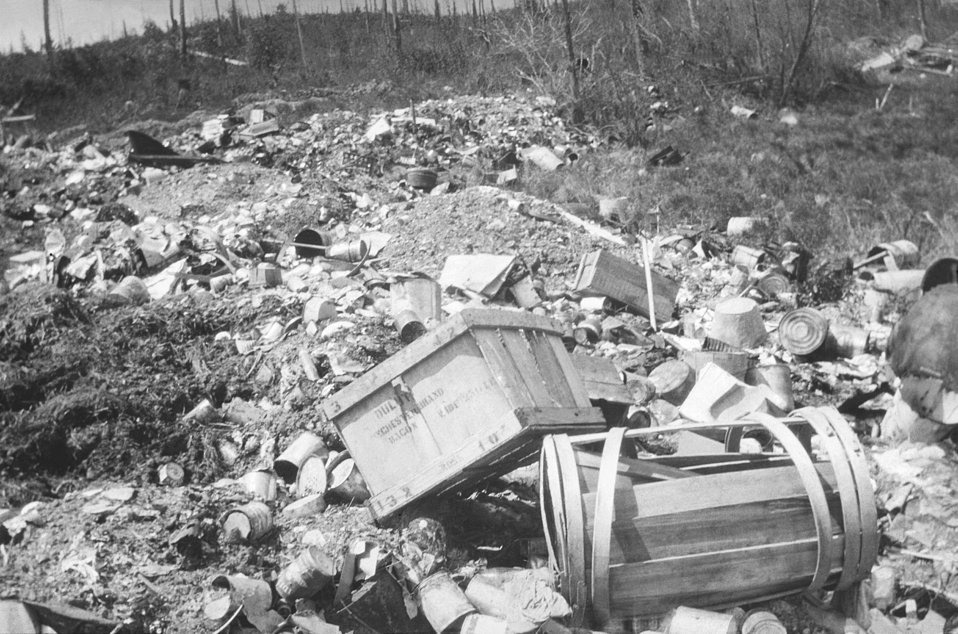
This historic 1915 image was captured at a dump site outside the Village of Marble, Minnesota. It highlighted the problem created by indiscriminate garbage disposal. It was one of a series of instructional photographs used by the Minnesota Board of Health to train public health workers. The focus of the images and the training effort was on protecting water supplies from bacterial contamination. From this photograph, one could surmise the potential for public health problems caused by the accumulation of solid waste.